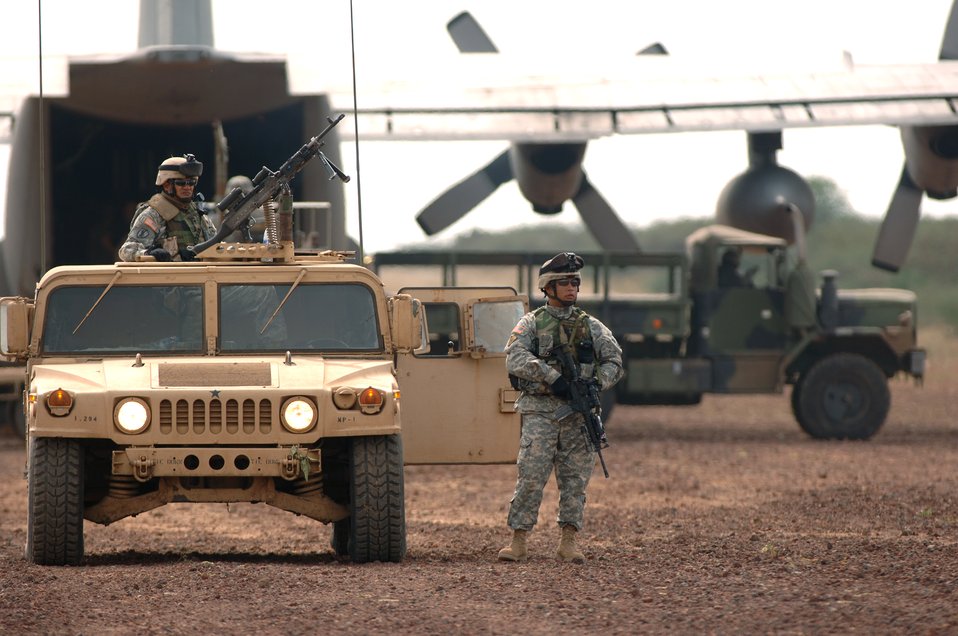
HOA 'Flex' mission

Guam Army National Guardsmen Specialists Albert Samana and Daniel Cruz move in to provide perimeter security for a C-130 Hercules delivering passengers and cargo to a U.S. contingency operating base in the remote village of Bilate, Ethiopia. The C-130 and crew are deployed to the Horn of Africa from Dyess Air Force Base, Texas.